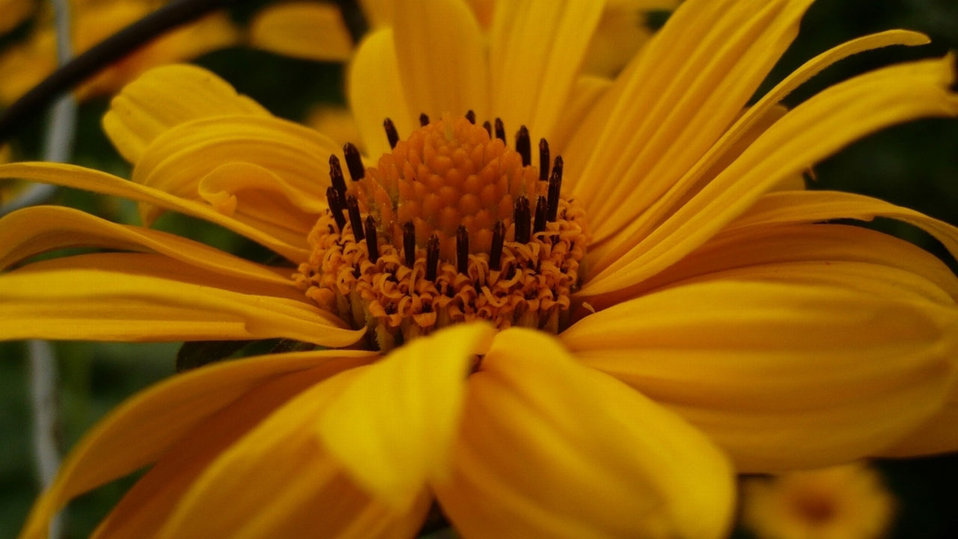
Flower

Picture a nice, yellow flower from close distance.